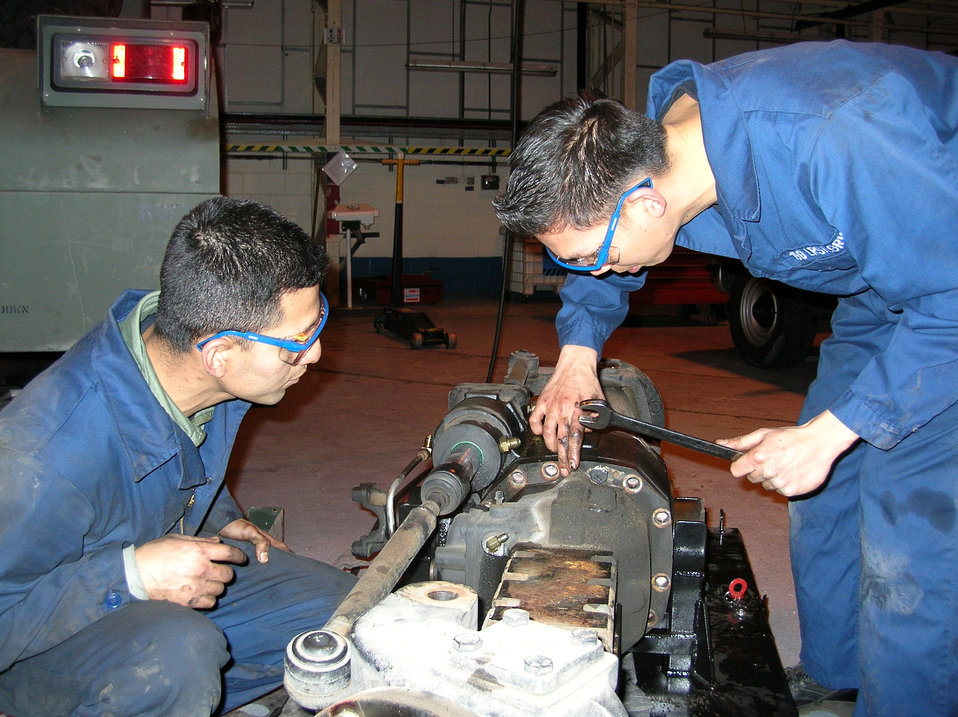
Vehicle maintenance Airmen use AFSO 21 initiatives

Staff Sgts. Oscar Figueroa and Lee Samson look for the right size wrench to remove the bolts of an axle gear Feb. 1 at Royal Air Force Mildenhall, Englad. New procedures these two Airmen helped develop reduces the amount of people and time needed to maintain this piece of equipment. The Airmen are from the 100th Logistics Readiness Squadron.